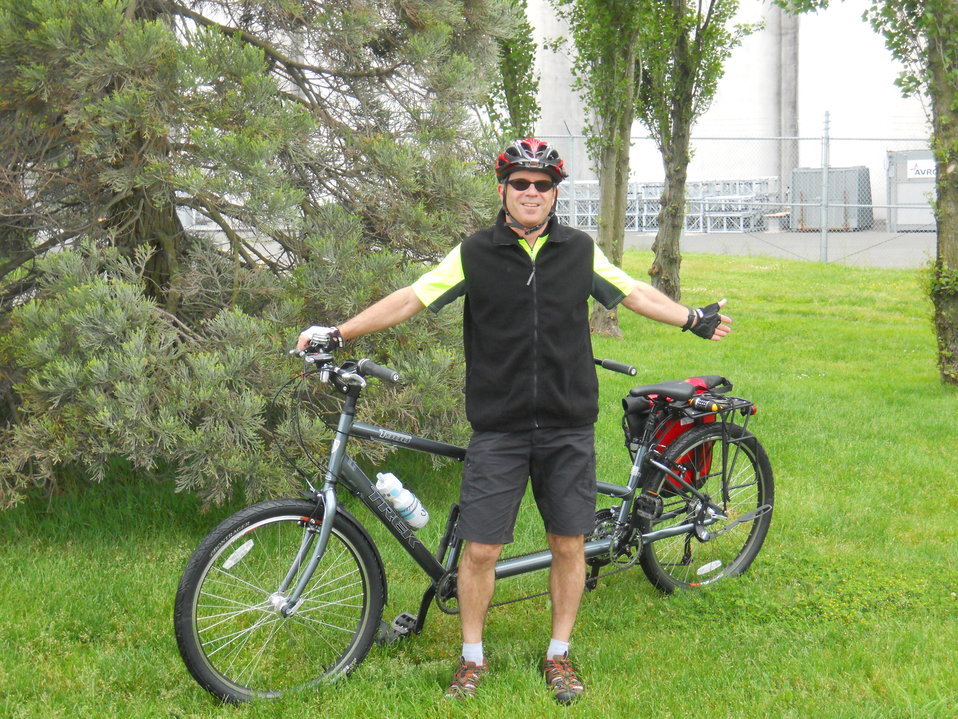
EPA Seattle Bike-To-Work Day 2014

Seattle area commuters show off their rides at EPA’s Bike-to-Work Day station.